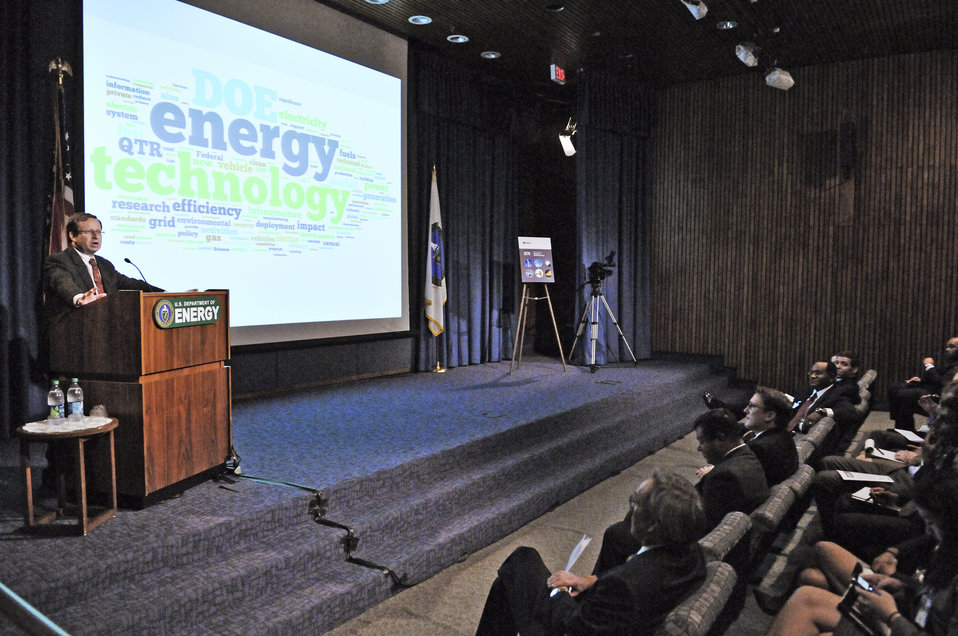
Dr. Steve Koonin introduces the Secretary of Energy, Steven Chu.